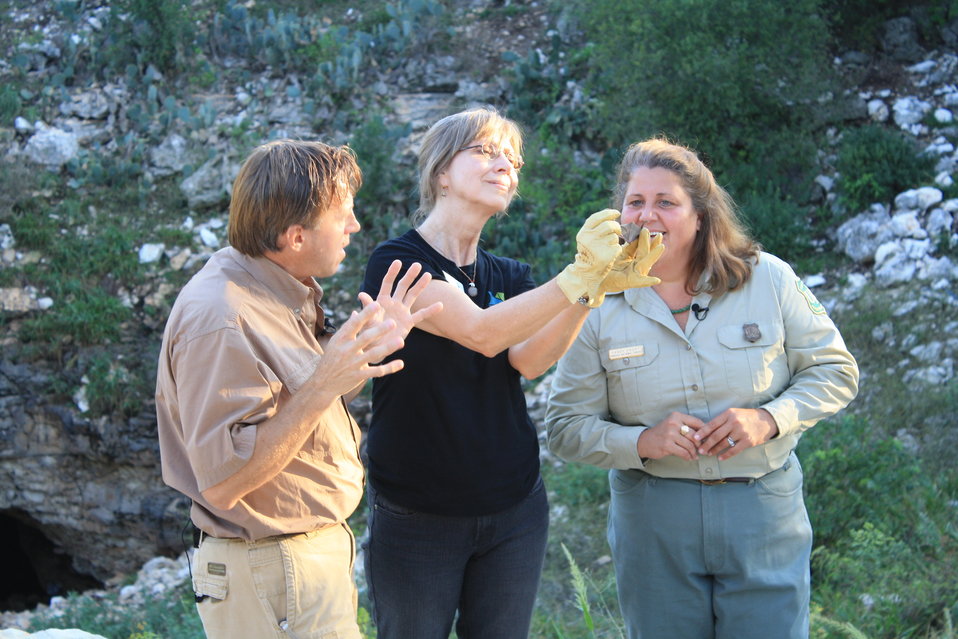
BCI and US Forest Service staff during broadcast

BCI staff Jim Kennedy and Dianne Odegard and US Forest Service staff Sandy Frost during BatsLIVE broadcast